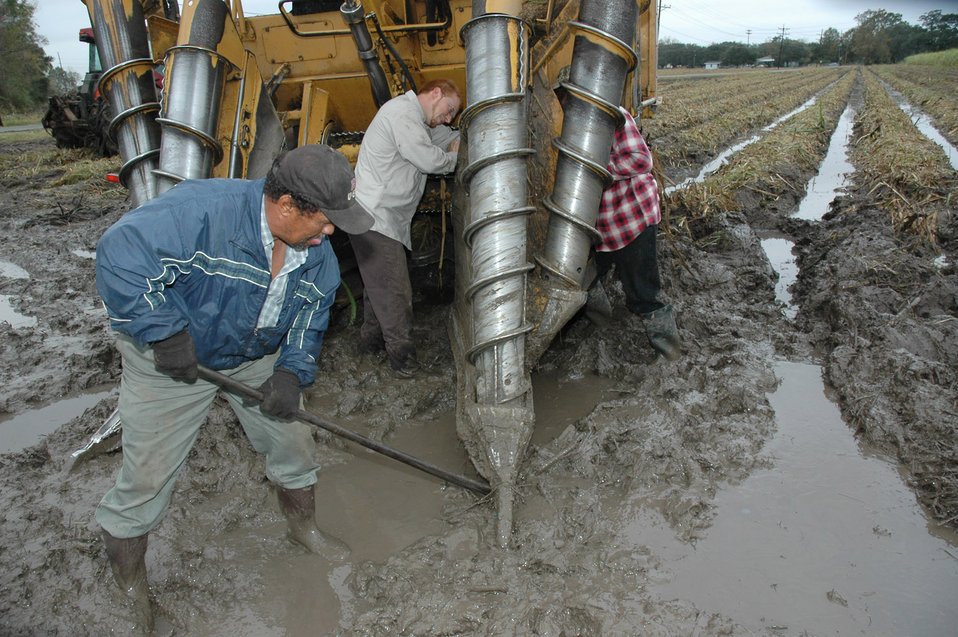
Reservist, his family find sweet success raisin' cane

Staff Sgt. Kent Roberts and two workers struggle in the mud to repalce a screw that broke from the combine during harvesting. The muddy conditions are part of the business in south Louisiana. As soon as the part is replaced, Sergeant Roberts gets back in the combine and continues harvesting. He is a reservist with the 926th Fighter Wings at Naval Air Station Joint Reserve Base New Orleans.